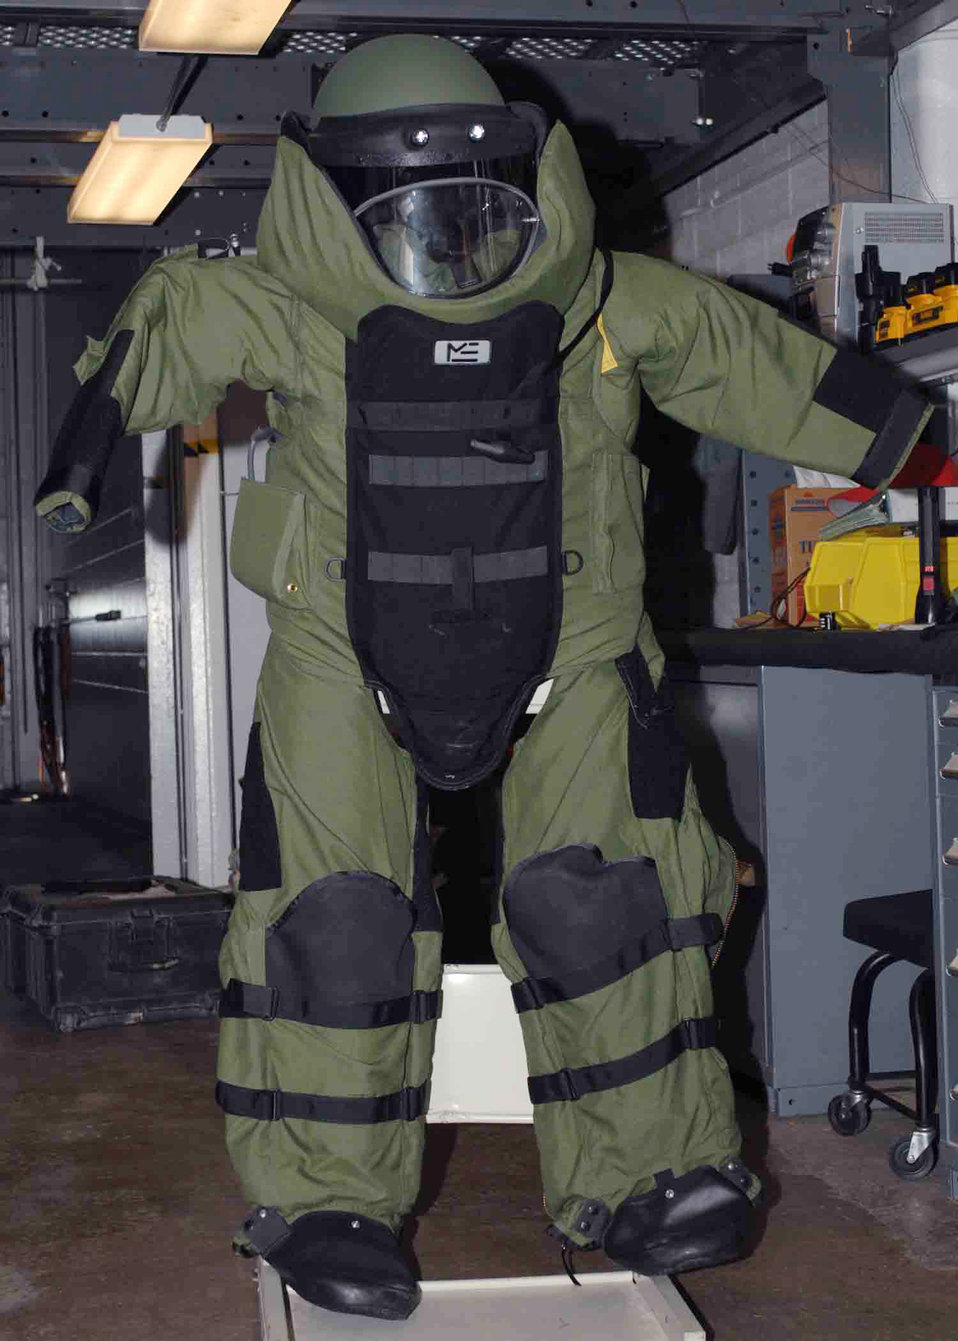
EOD Airmen help keep community safe

An explosive ordnance disposal bomb suit hangsJuly 29 at Cannon Air Force Base, N.M. The suit is made of Kevlar with metal plates and can protect a body from a blast within arms reach.